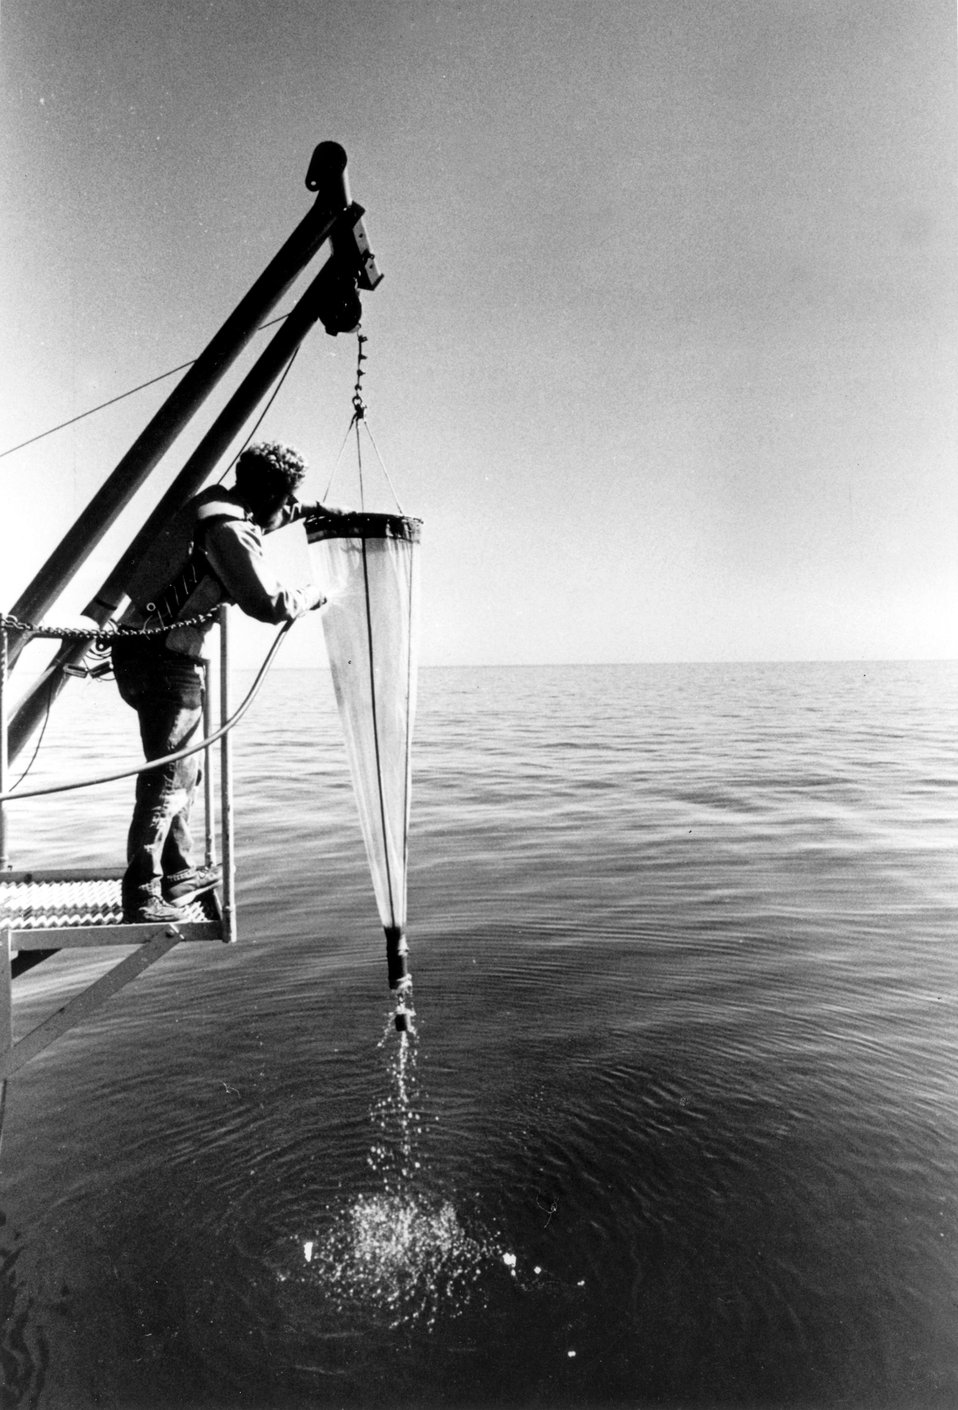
A research technician washes down a plankton net which is bringing up samples of minute plant and animal life from Lake Michigan in the vicinity of a steam electric generating station.
c.1972